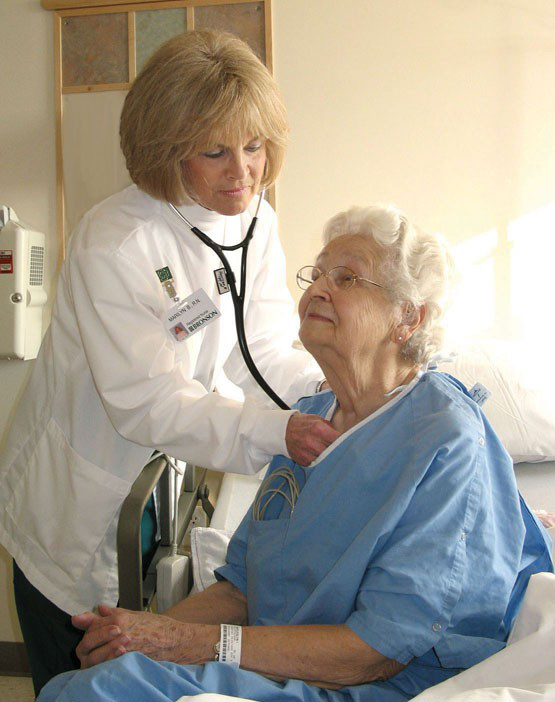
2005 Baldrige Award Winner, Bronson Medical Hospital